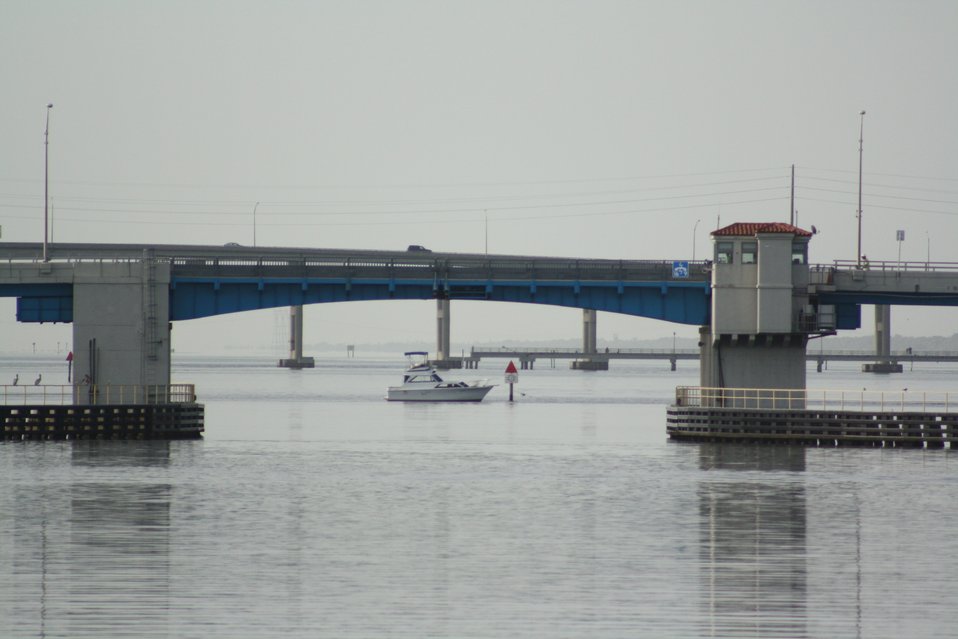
Approaching the narrow opening of the Fort Pierce drawbridge from the north.